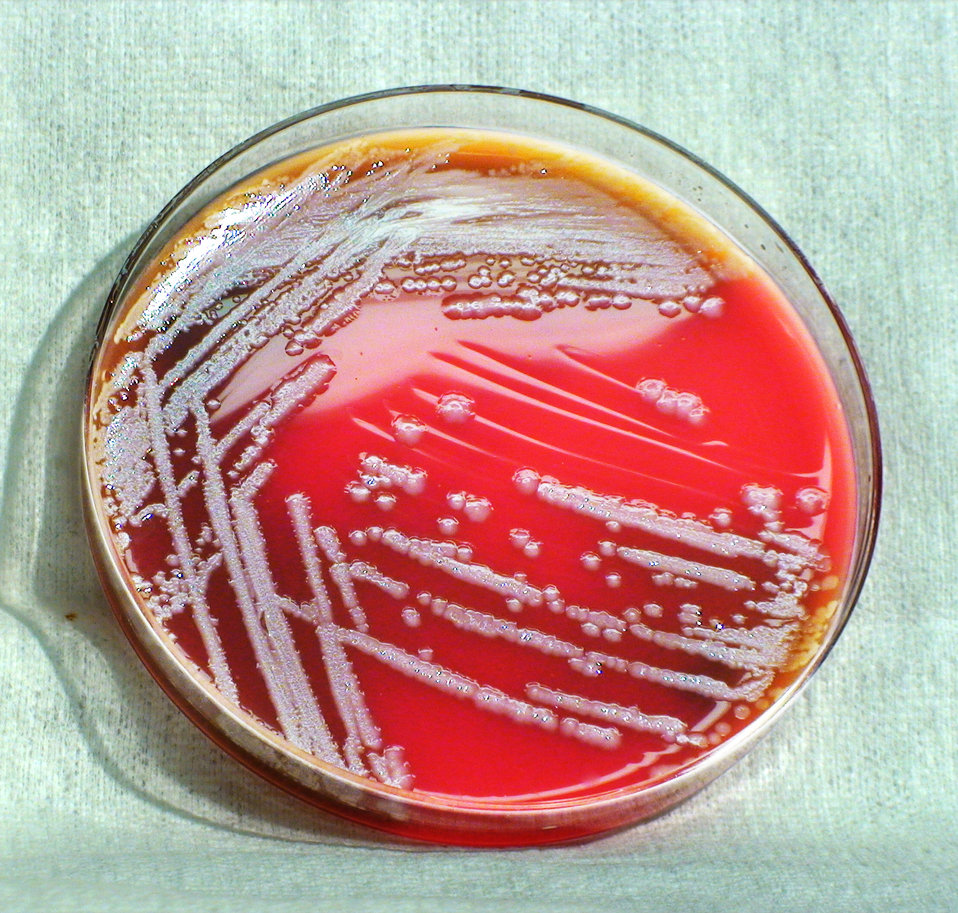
This photograph depicts the colonial morphology displayed by Gram-negative Burkholderia thailandensis bacteria, which was grown on a medium of sheep's blood agar (SBA), for a 48 hour time period, at a temperature of 42�C. See PHIL 12409, for a closer view of these bacterial colonies. Also, see both PHIL 12401 and 12402, for views of this bacterial specie, grown on the same medium, for the same amount of time, however, at a temperature of only 37�C. Also note PHIL 12423 and 12424 depicting colonial growth on the same medium, and again, at a lower temperature (37�C), and cultivated for only half the amount of time (24hr). Finally, PHIL 12431 and 12432 display this specie's bacterial growth, again on SBA, for half the time (24hr), but at a the same temperature (42�C).